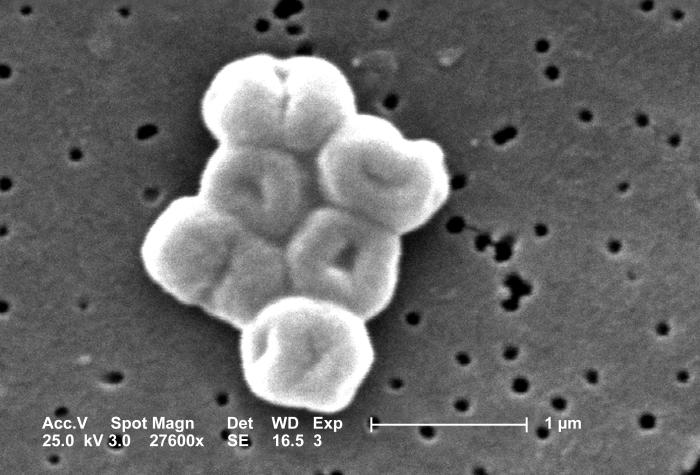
This SEM depicts a highly magnified cluster of Gram-negative, non-motile Acinetobacter baumannii bacteria; Mag - 27600x. See PHIL 10095 for a colorized version of this image.